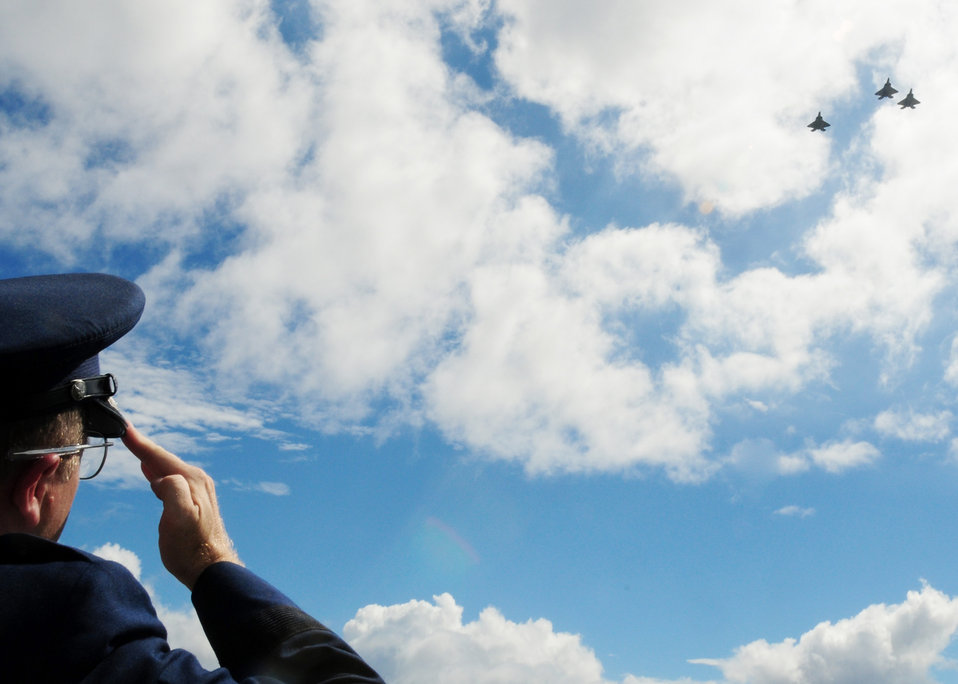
RAIDR 21 memorial

Brig. Gen. Phil Ruhlman, commander of the 36th Wing at Andersen Air Force Base, Guam, salutes as F-22 Raptors fly the missing man formation over a memorial unveiling service held at the Governor's Complex at Adelup Point in Hagatna, Guam, July 20. A memorial was designed and unveiled as a tribute to the six men who lost their lives July 21, 2008, when their B-52 Stratofortress -- call sign RAIDR 21, crashed off the coast of Guam during a mission.